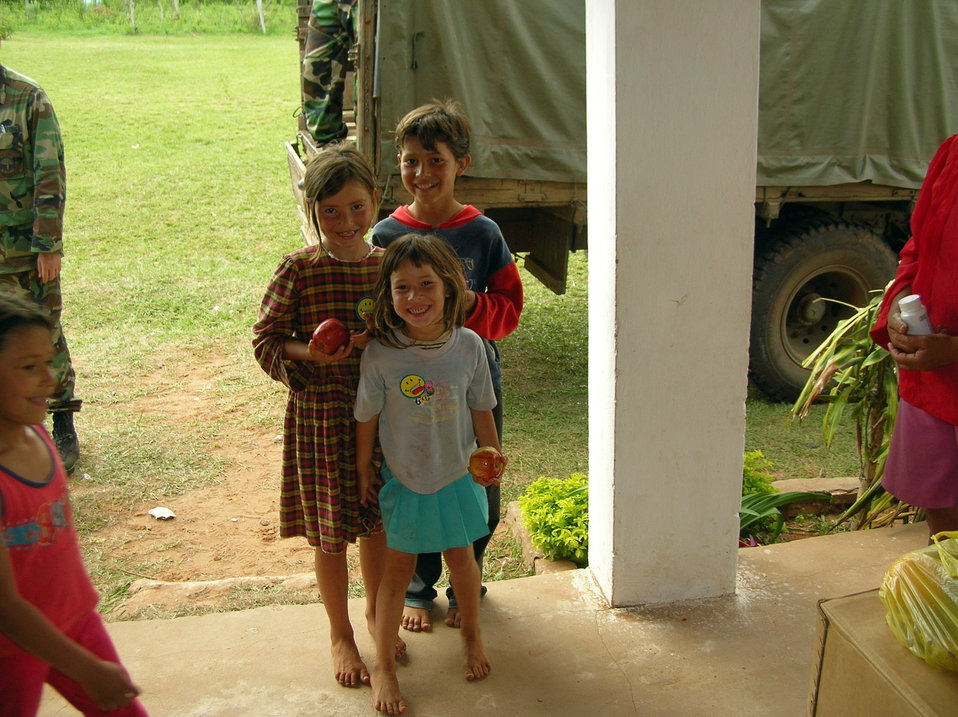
Medical Group members return from humanitarian mission

PARAGUAY (AFPN) -- Three Paraguayan children smile for the camera after receiving apples at one of the medical sites set up by Air Force and Paraguayan doctors.